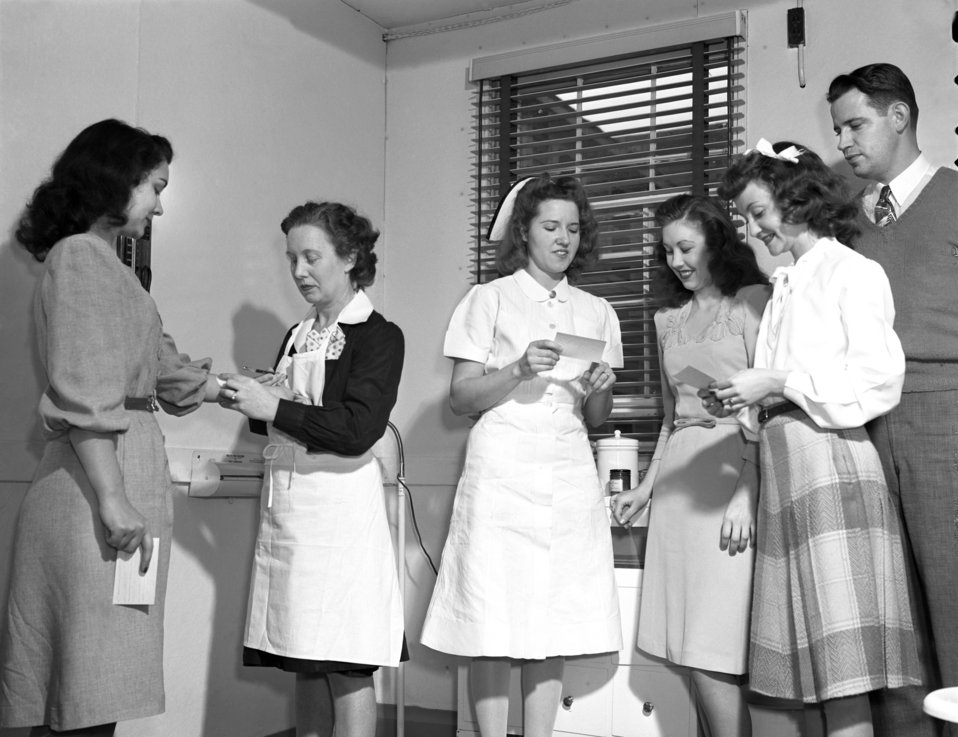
T.B. Testing Health Department Oak Ridge 1947

3300-2 DOE photo Ed Westcott 2-17-1947 L to R Bernise Ferrant, Frances Jeanntte, Mrs. L. K. Stark R.N., June Sharp, Katherine Roach, and T. Woodrow Dwyer